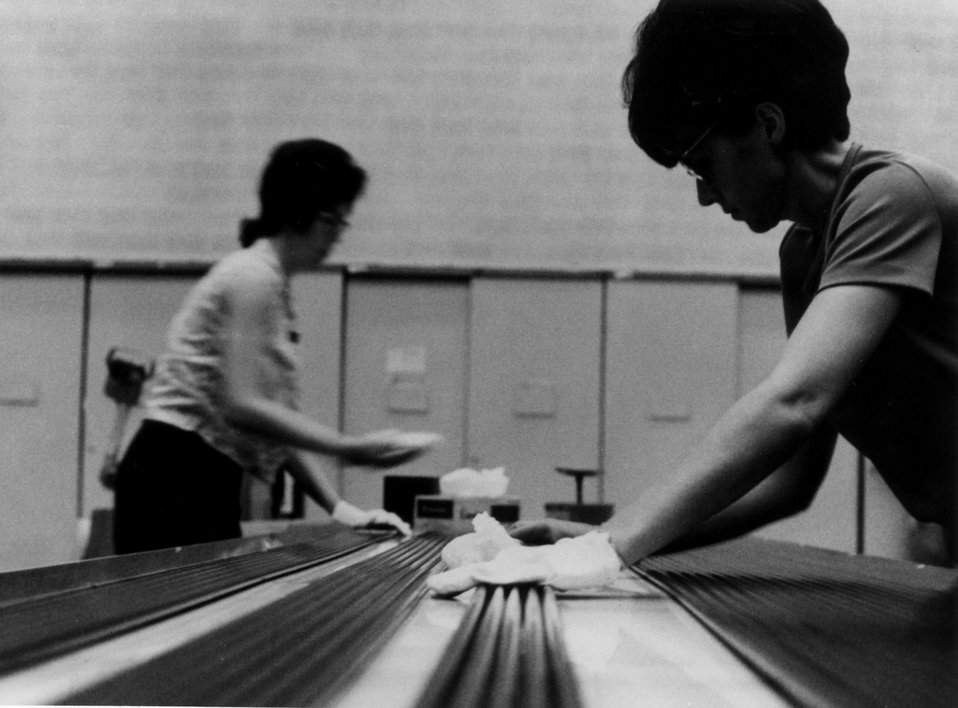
Cleaning and inspecting of reactor fuel elements at General Electric plant. c. 1971